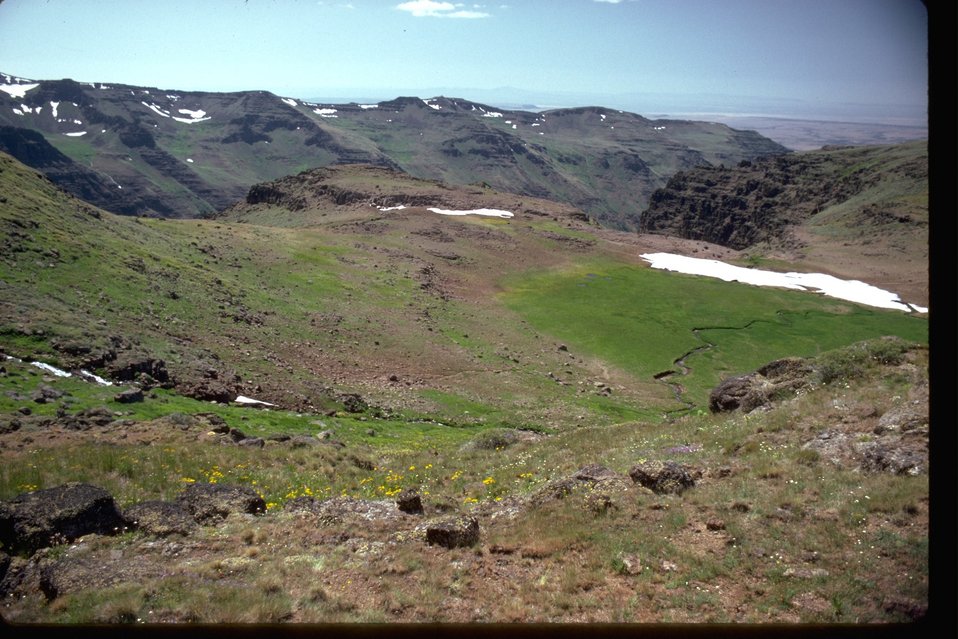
Classic hanging garden along the north rim of Big Indian Gorge in the Steens area.